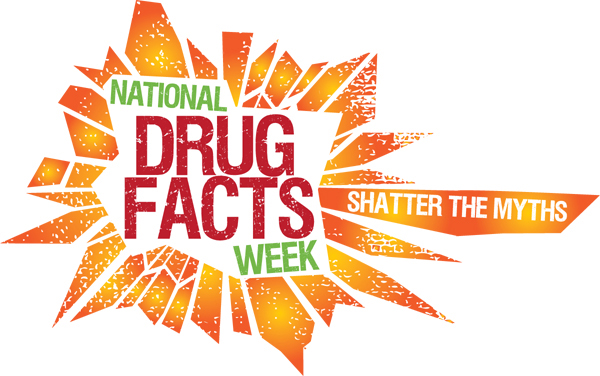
NDFW logo